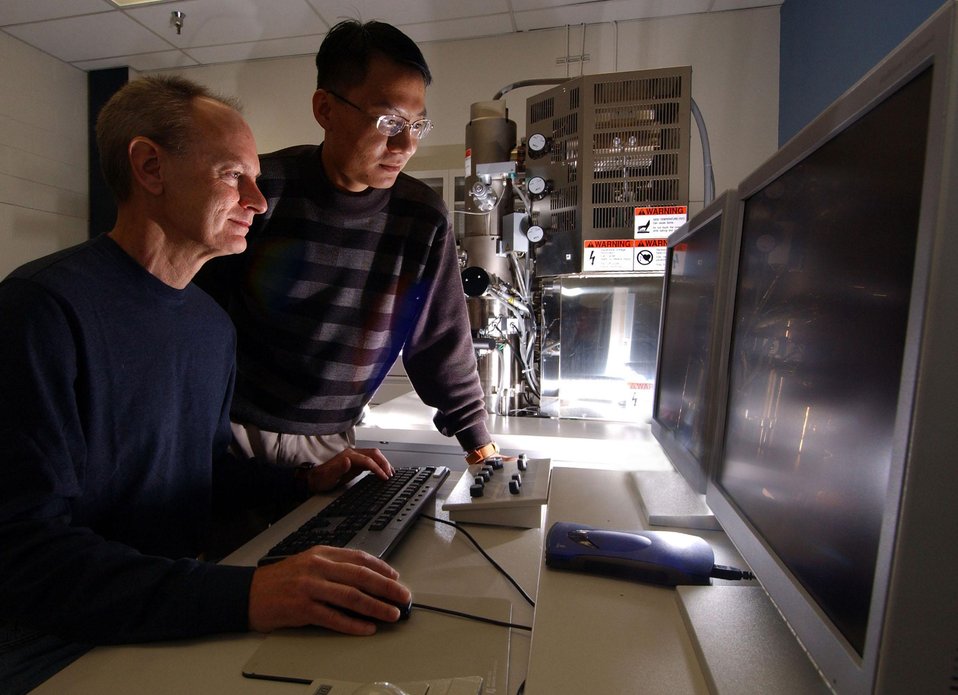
SANDIA RESEARCHER AND UNIVERSITY OF NEW MEXICO PH.D. STUDENT EXAMINE PLATINUM USING A SCANNING ELECTRON MICROSCOPE.

RESEARCHERS FROM DOE'S SANDIA NATIONAL LABORATORIES AND THE UNIVERSITY OF NEW MEXICO CENTER FOR MICRO ENGINEERED MATERIALS HAVE DEVELOPED A NEW WAY OF MIMICKING PHOTOSYNTHETIC PROTEINS TO MANIPULATE PLATINUM AT THE NANOSCALE. THE METHOD HAS THE POTENTIAL OF CHANGING THE METAL'S PROPERTIES AND BENEFITING EMERGING TECHNOLOGIES.